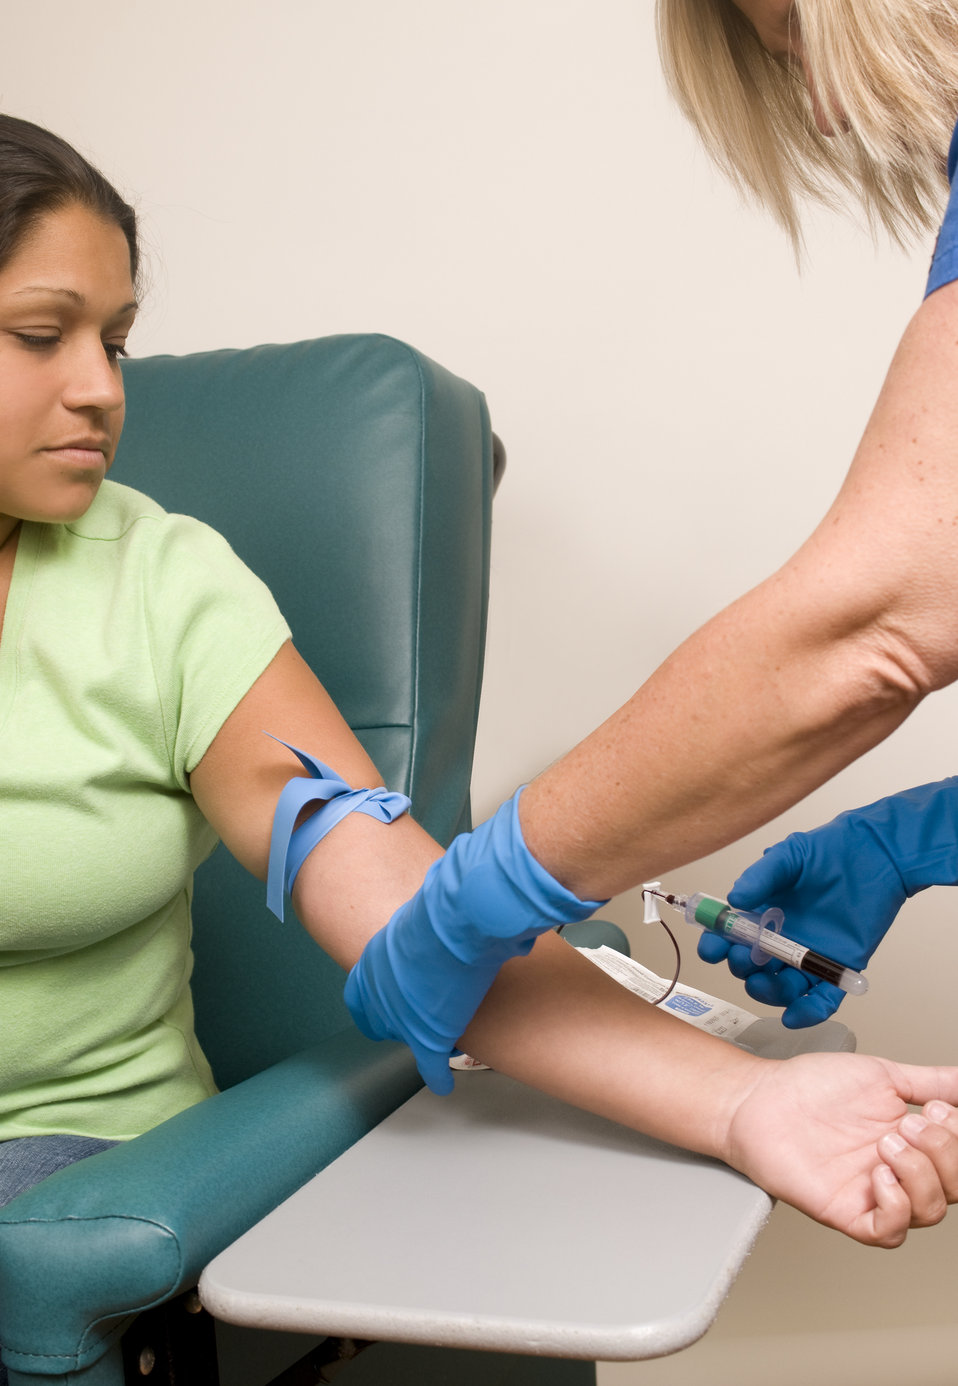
This image depicts a female patient seated in a clinic, who was in the process of having some blood extracted from her left arm's antecubital vein during a phlebotomy procedure. The two gloved hands of the female phlebotomist are seen securing the venipunture site: right hand holding the patient's arm, right hand holding the green-topped interchangeable blood collection vacutainer tube.